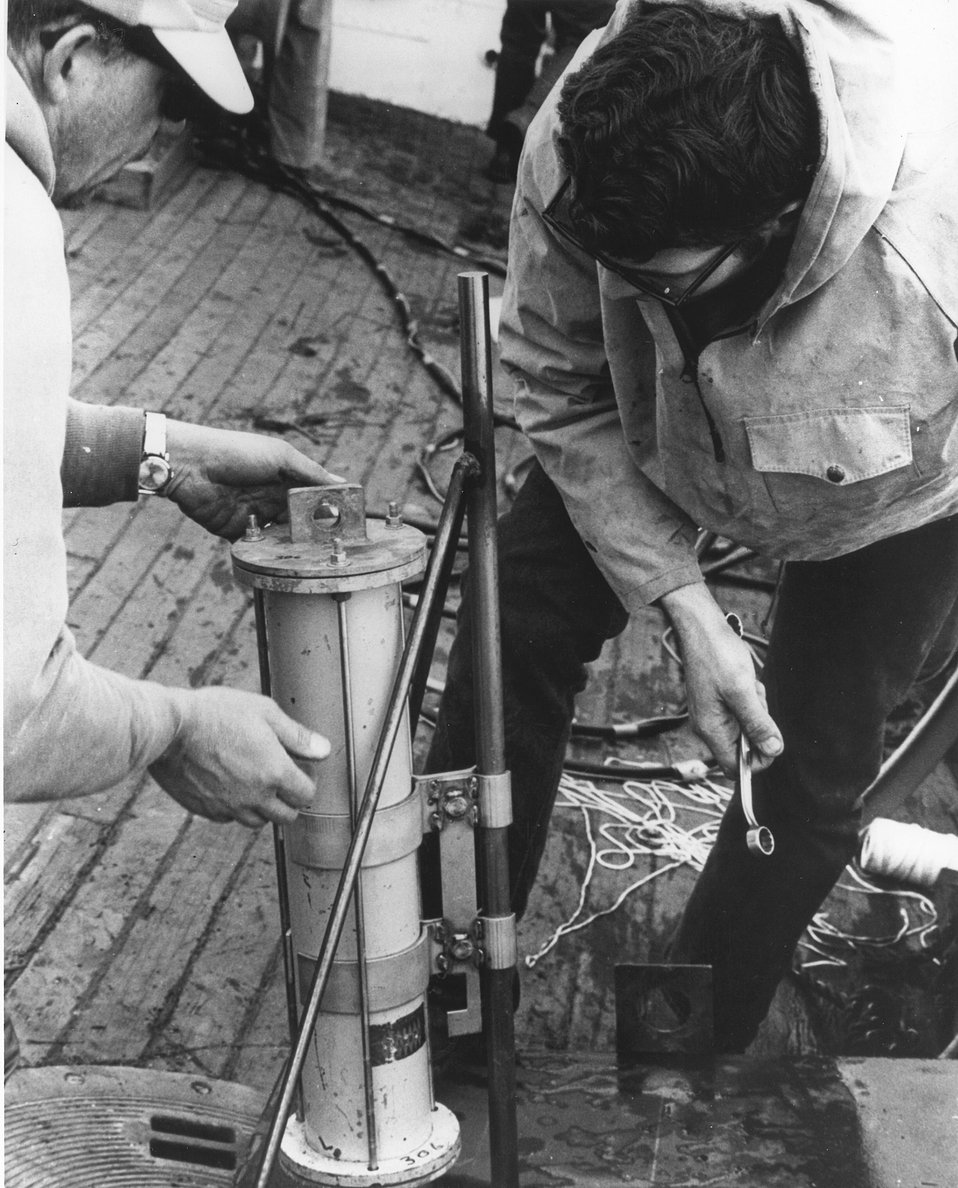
William Prepejchal and Gerald P. Romberg of the U.S. Atomic Energy Commission's Argonne National Laboratory Radiologist Physics Division, fasten a temperature recording instrument to its 800 pound steel anchor prior to placing it in Lake Michigan. c. 1972